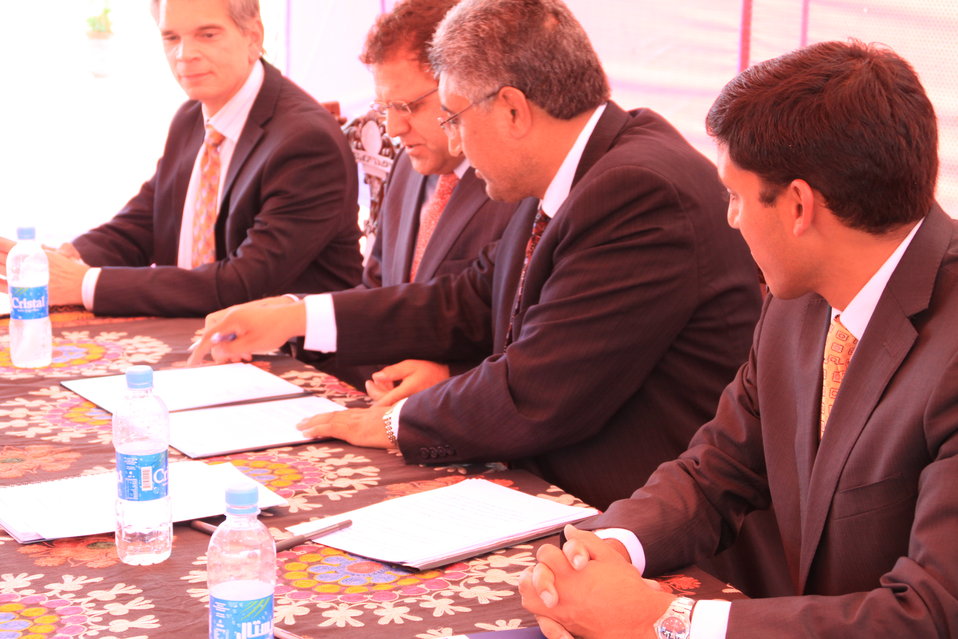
Baddam Bagh Farm